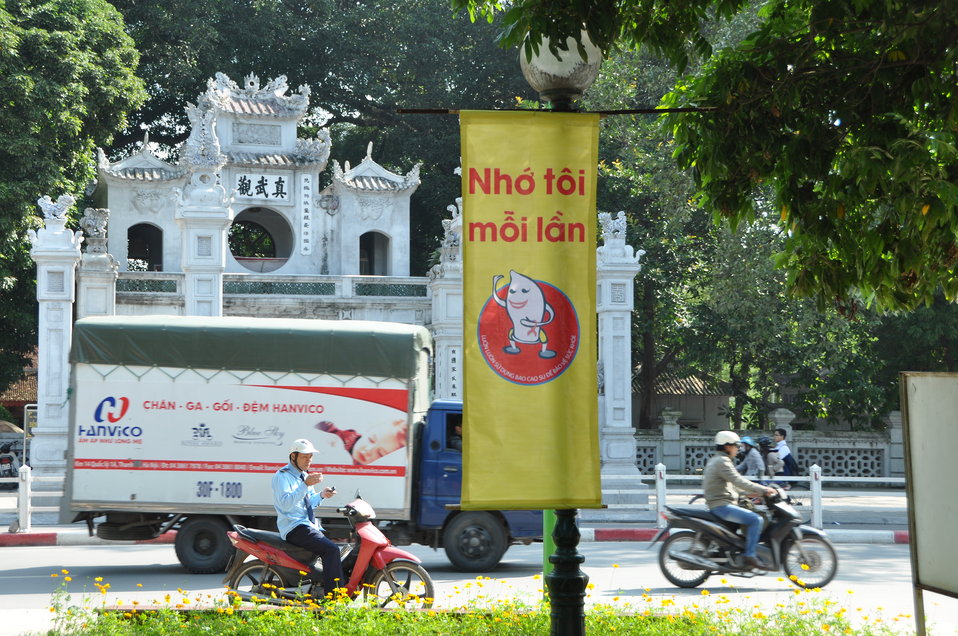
100% Condom Use Campaign Launch, Dec. 2, 2011